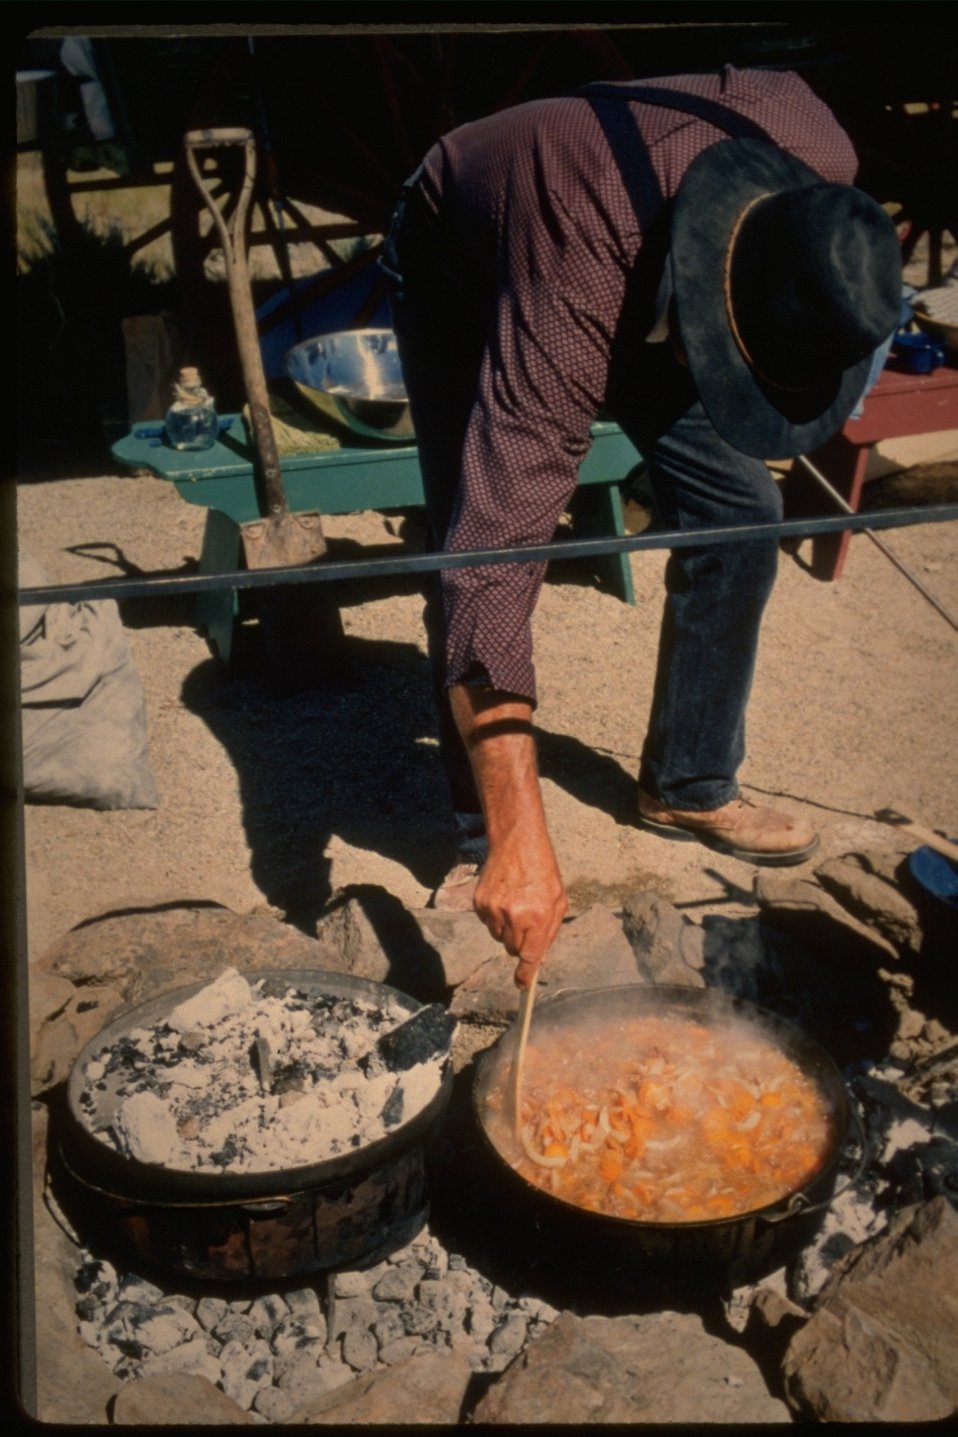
A pot of beans from the Pioneer Festival at the NHOTIC.